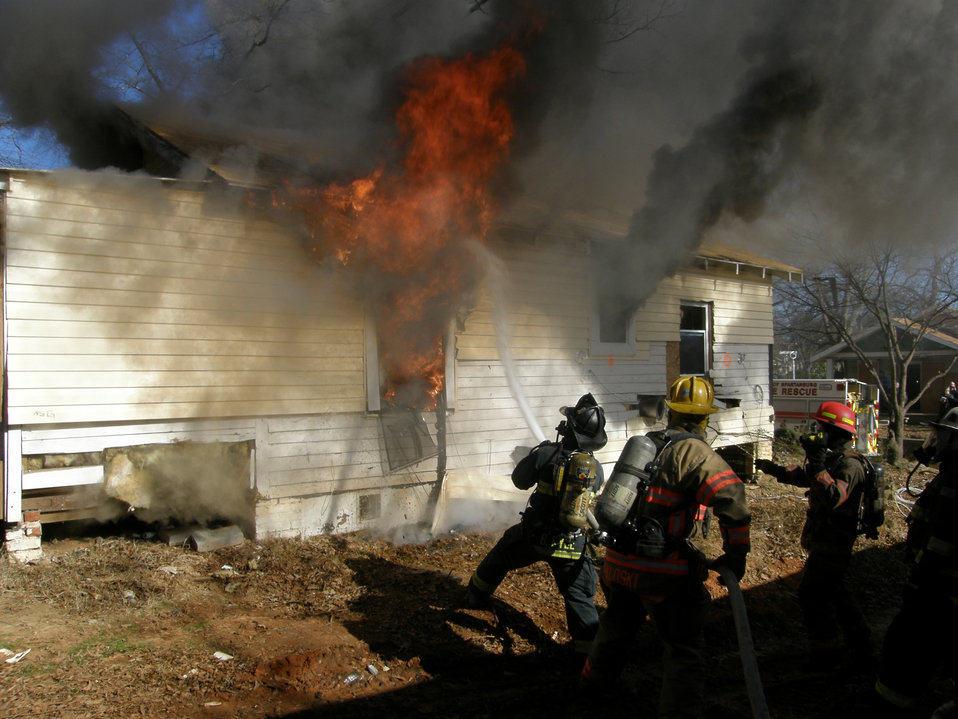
Spartanburg Fire Test

Firefighters in Spartanburg, S.C., battle a 'test burn' of an abandoned house in an experiment to demonstrate new techniques for combatting flashover, an extremely dangerous phenomenon in fires. Researchers from NIST, the International Society of Fire Service Instructors, and state and local fire and safety officials participated in the tests the week of Jan. 20, 2013.